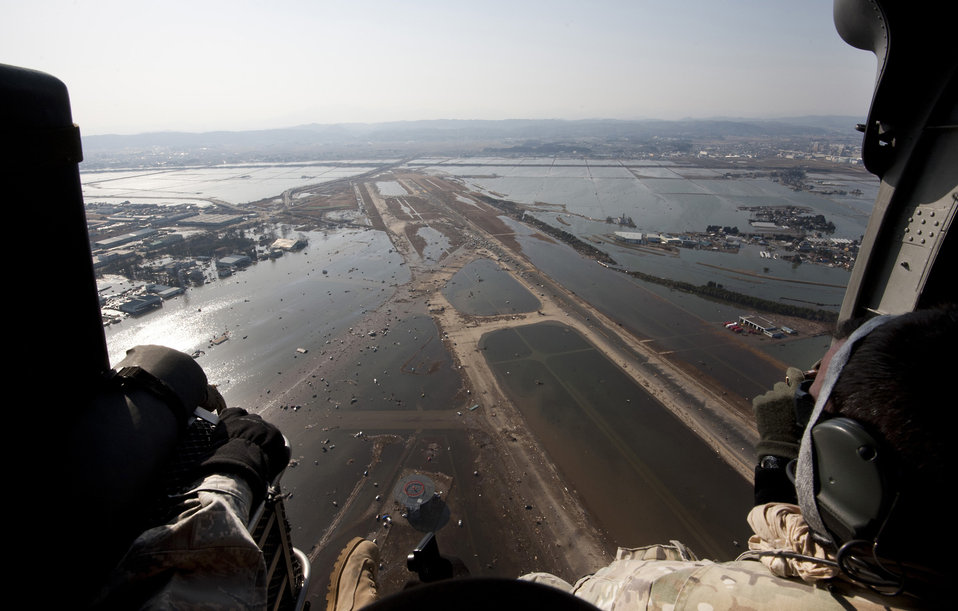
Assessing the damage

Airmen and Marines assisting with Japan's earthquake and tsunami recovery efforts fly over the Sendai Airport, Japan, March 13, 2011, to survey the aftermath of the earthquake and subsequent tsunami that struck the region March 11. The small dots covering the runway are vehicles left there after the tsunami water receded.